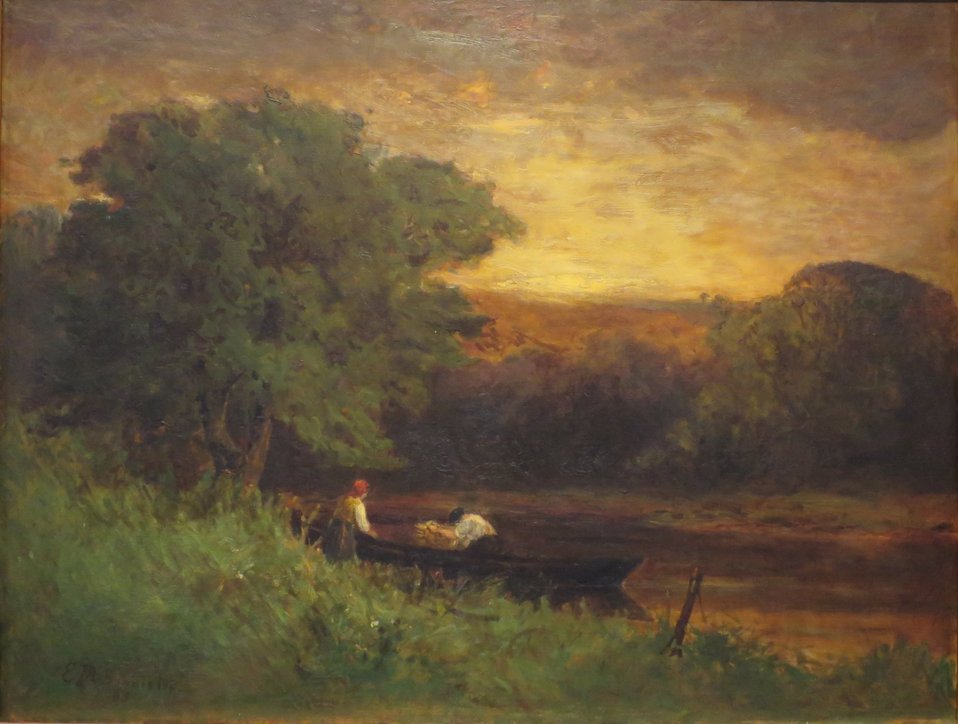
'River Scene' by Edward Mitchell Bannister, 1883, oil on canvas, Honolulu Museum of Art